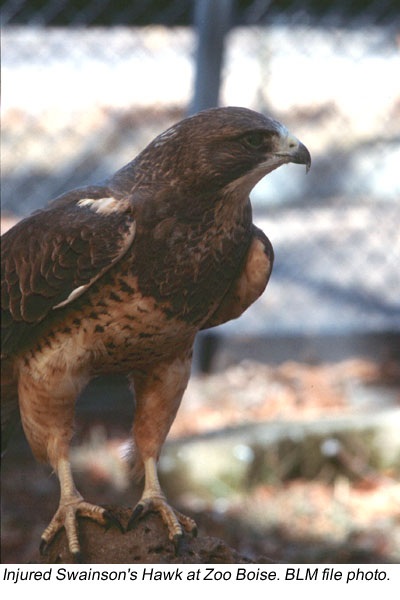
Injured Swainsons Hawk at Zoo Boise Hawk Birds of Prey Wildlife